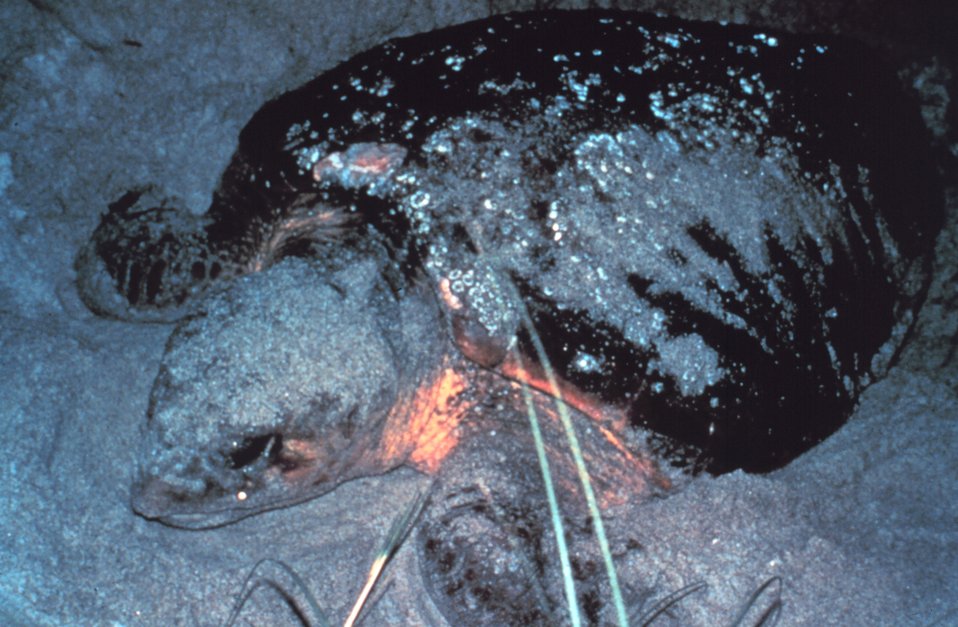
Loggerhead sea turtles are a threatened species of sea turtle. Every year over 4,000 female loggerhead sea turtles nest on the beaches with Canaveral National Seashore.